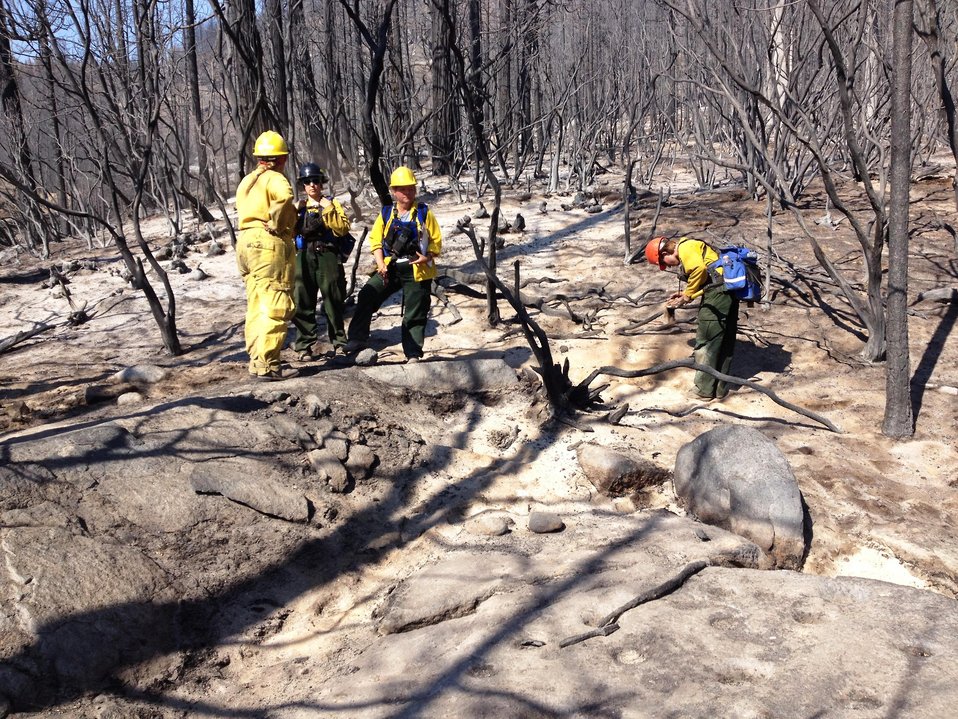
Burned Area Emergency Response (BAER) archeologists and soil scientists assess burned area at Rim Fire. . BAER teams start work even before the fire is completely extinguished at the Rim Fire. BAER is a rapid assessment of burned watersheds by a BAER team to identify imminent post-wildfire threats to human life and safety property and critical natural or cultural resources on National Forest System lands and take immediate actions to implement emergency stabilization measures before the first major storms. Fires result in loss of vegetation exposure of soil to erosion and increased water runoff that may lead to flooding increased sediment debris flows and damage to critical natural and cultural resources. BAER team members implement seeding and mulching installation to prevent erosion, erect temporary water run-off control structures that will protect recovering areas, and installation of warning signs, replace safety related facilities, remove safety hazards, prevent permanent loss of habitat for threatened and endangered species, and prevent the spread of noxious weeds and protect critical cultural resources. The Rim Fire in the Stanislaus National Forest near in California began on Aug. 17, 2013 and is under investigation. The fire has consumed approximately 256,169 acres and is 84% contained.